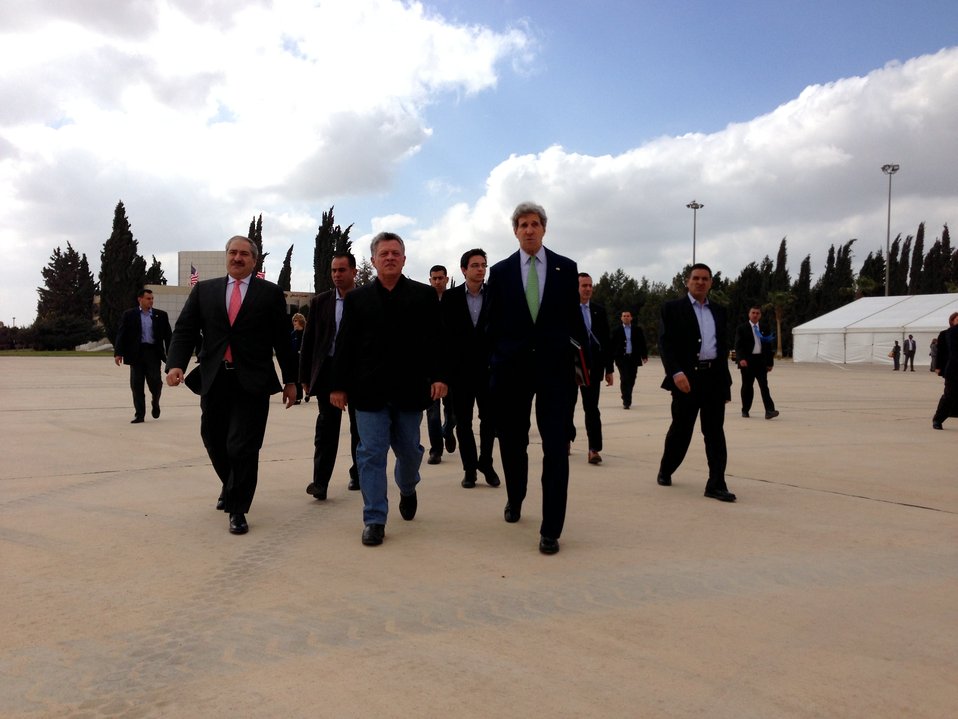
Secretary Kerry and King Abdullah Walk to Marine One

U.S. Secretary of State John Kerry and Jordan's King Abdullah II walk to greet President Barack Obama who was just arriving in Marine One at Amman's airport on March 23, 2013.